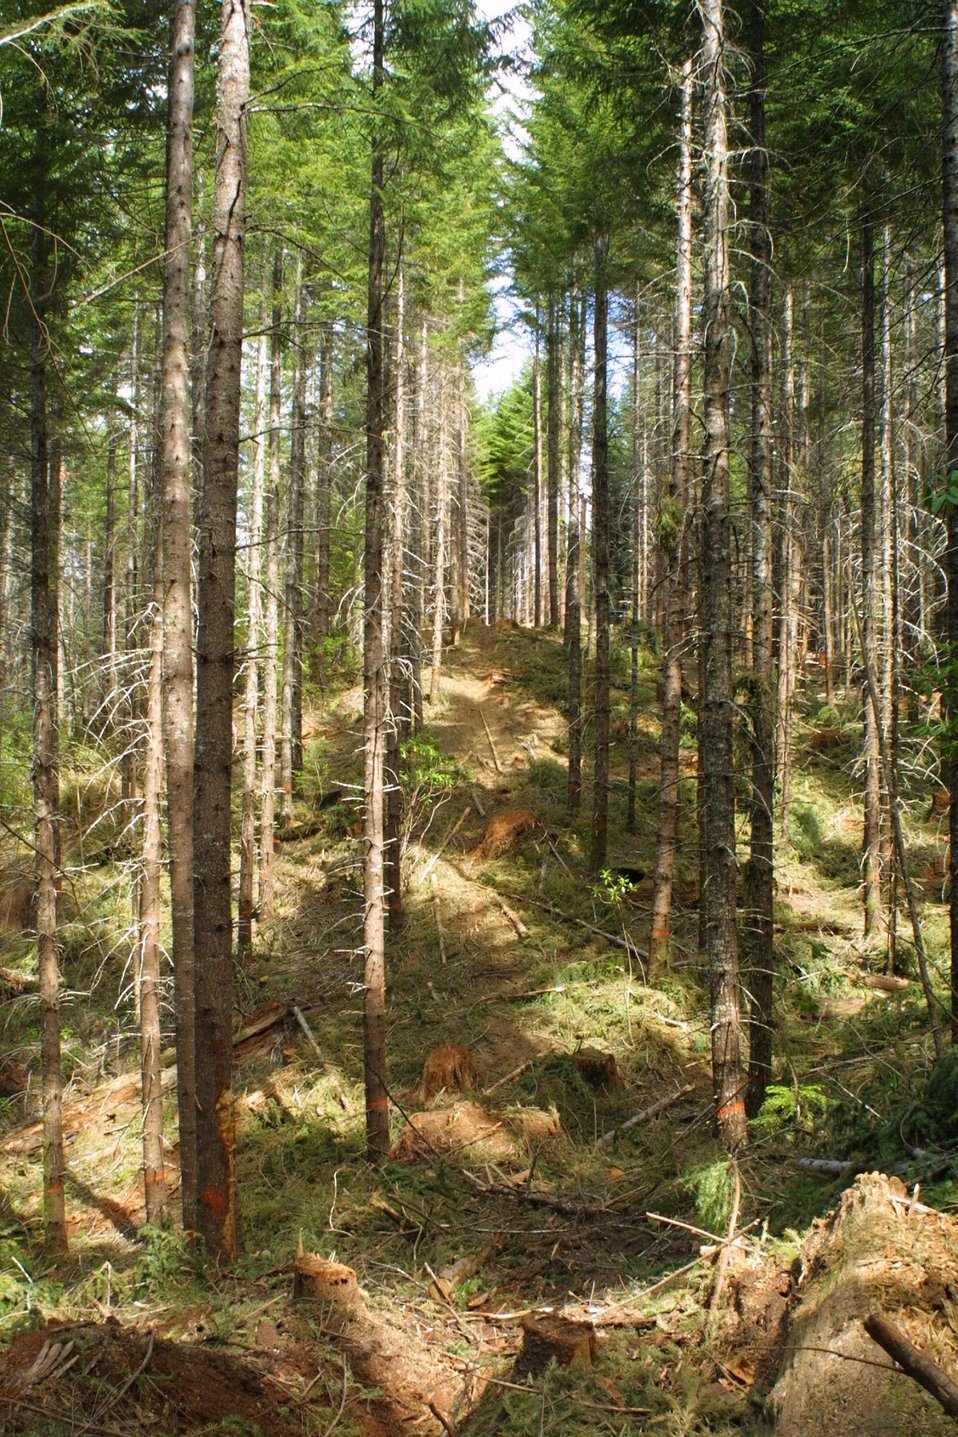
Camas East Timber Sale in Late Successional Reserve.